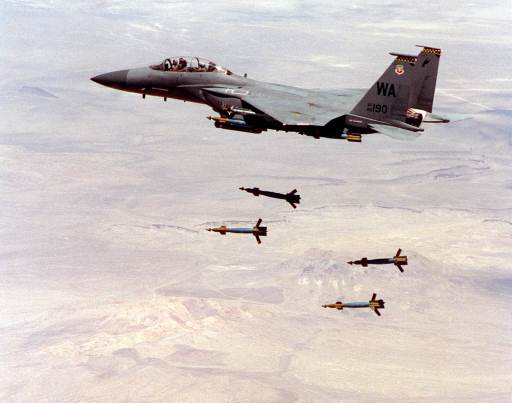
Bombs away

FILE PHOTO (AFPN) -- An F-15E Strike Eagle drops GBU-27 laser guided bombs over the ranges north of Nellis Air Force Base, Nev., after flying a training mission during the extensive course.